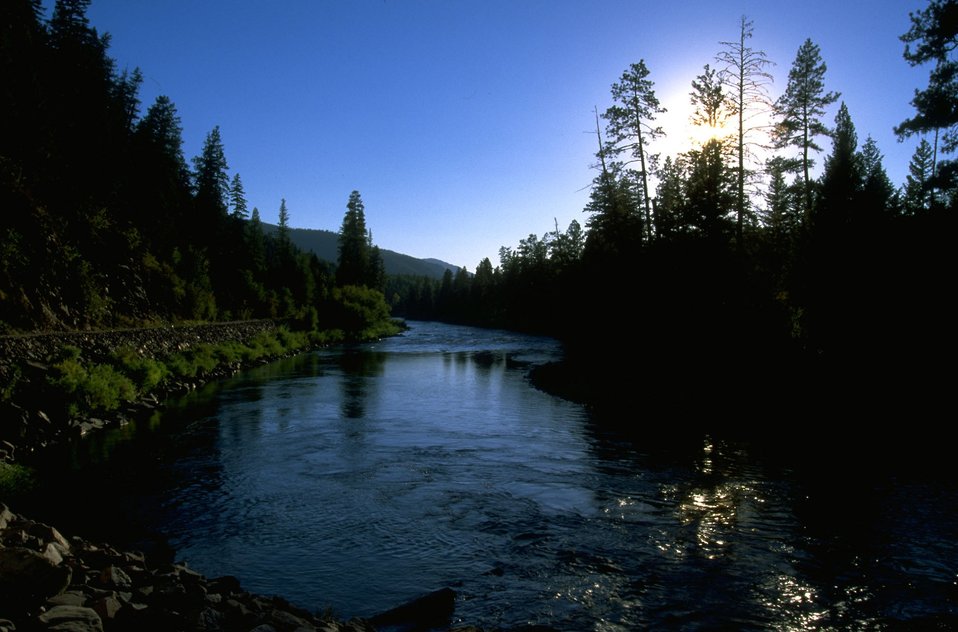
Scenic shot of Blackfoot River with sunset approaching